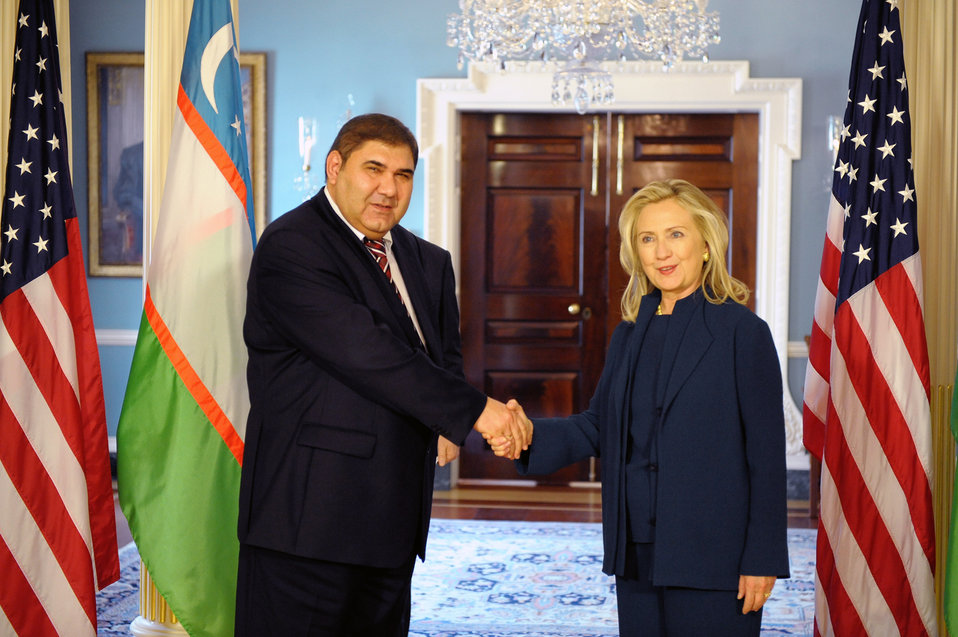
Secretary Clinton Shakes Hands With Uzbek Foreign Minister GanievSecretary Clinton Shakes Hands With

U.S. Secretary of State Hillary Rodham Clinton shakes hands with Uzbek Foreign Minister Elyor Ganiev after their bilateral meeting at the U.S. Department of State in Washington, D.C., in September 29, 2011.